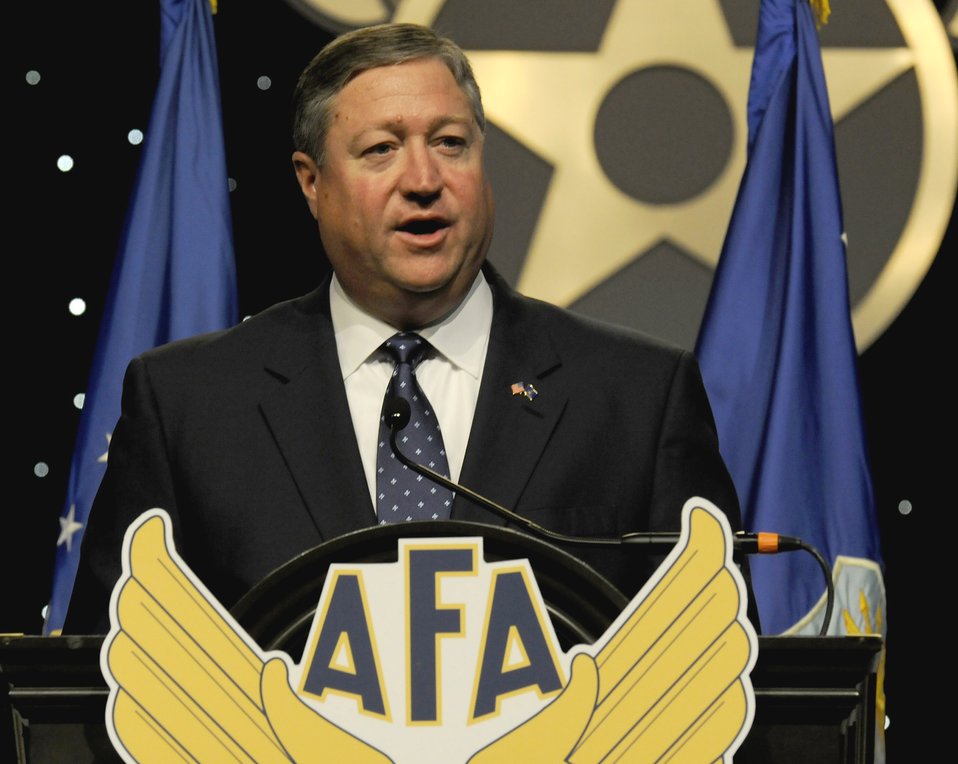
SecAF delivers

Secretary of the Air Force Michael Donley delivers a